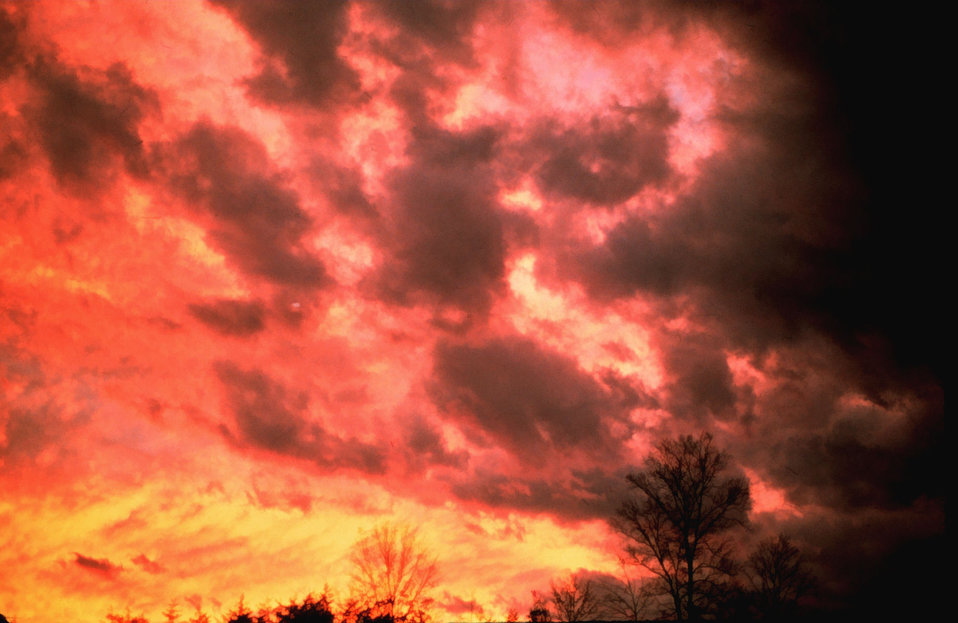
Sunrise on a cold winter day